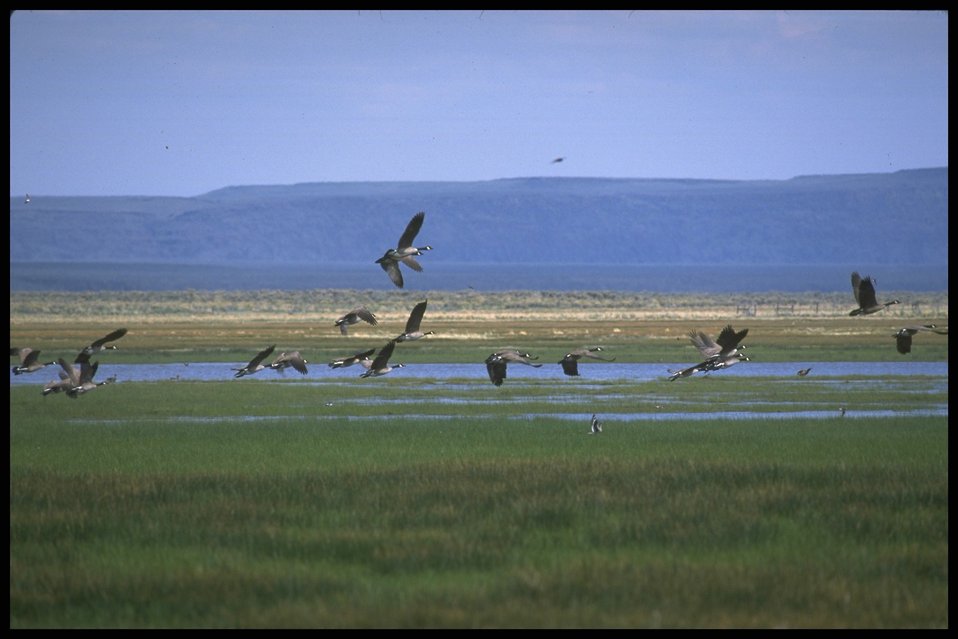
Far shot of wild geese, Lakeview District.